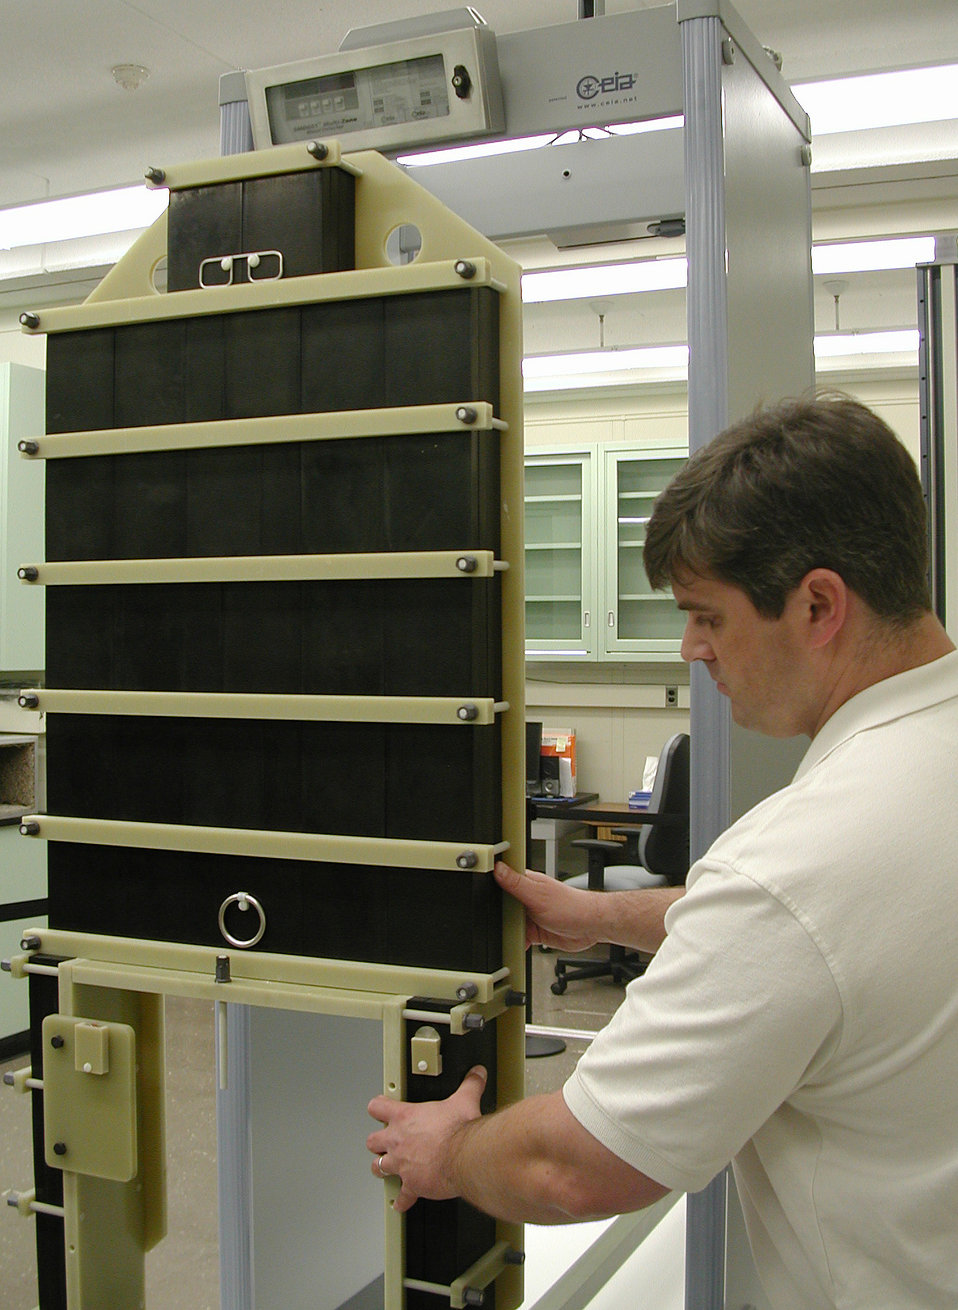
Electromagnetic Phantom; Metal Detectors

Guest researcher John Jendzurski prepares the NIST electromagnetic phantom for passage through the walk-through metal detector behind it. The carbon-polymer blocks of the phantom are arranged in a form that simulates the mass and height of the average American adult male. Metal objects such as the mock eyeglasses and belt buckle (top and center of the phantom) test the detector's function.